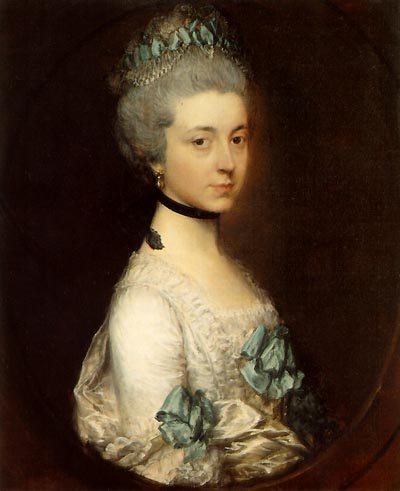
Lady Elizabeth Montagu, Duchess of Buccleuch and Queensberry